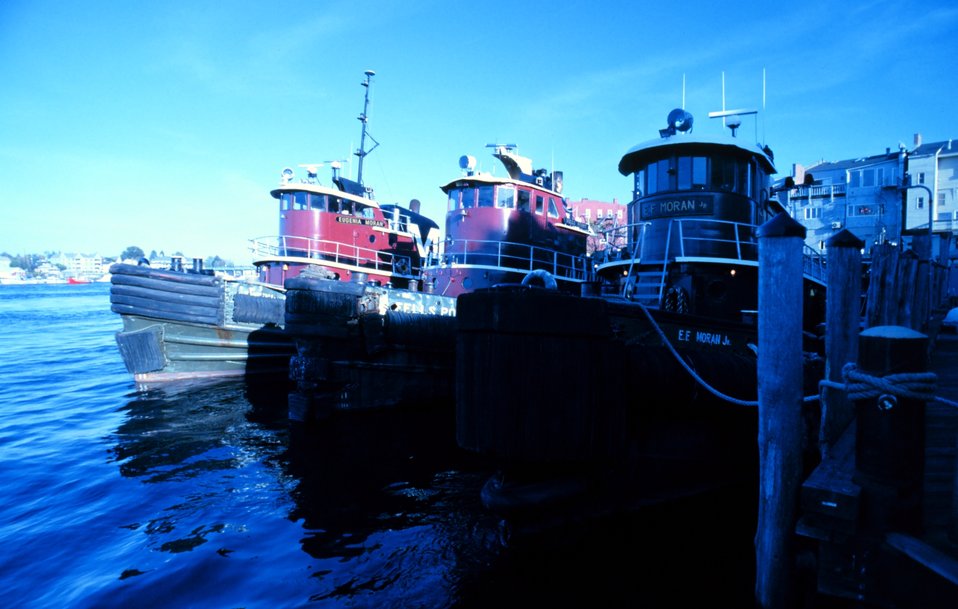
Portsmouth Harbor tugboats.